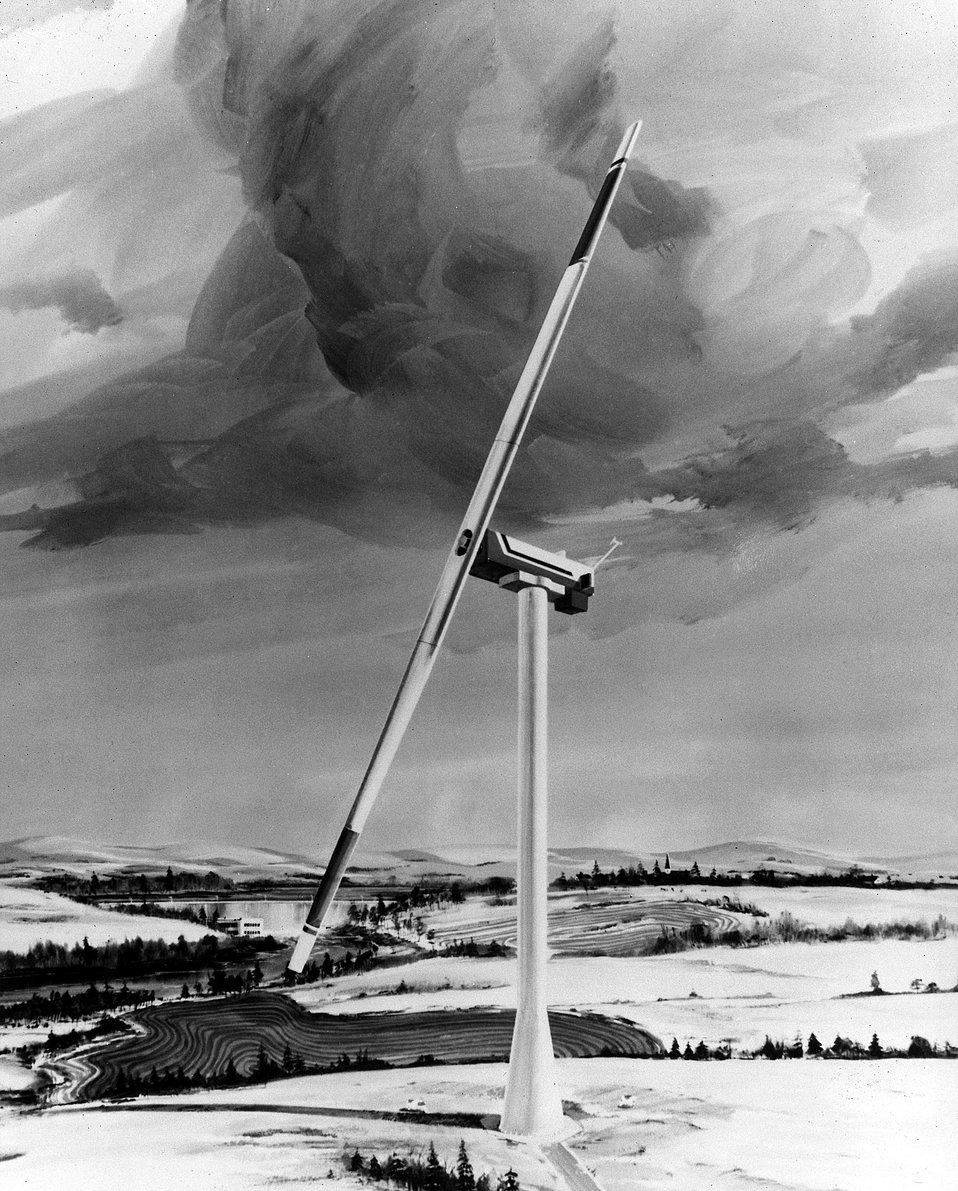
Artist's rendering of the 'largest windmill in history,' to be designed and built by Boeing Engineering and Construction for a test program conducted by the Department of Energy (DOE) and managed by the National Aeronautics and Space Administration (NASA). c. 1977